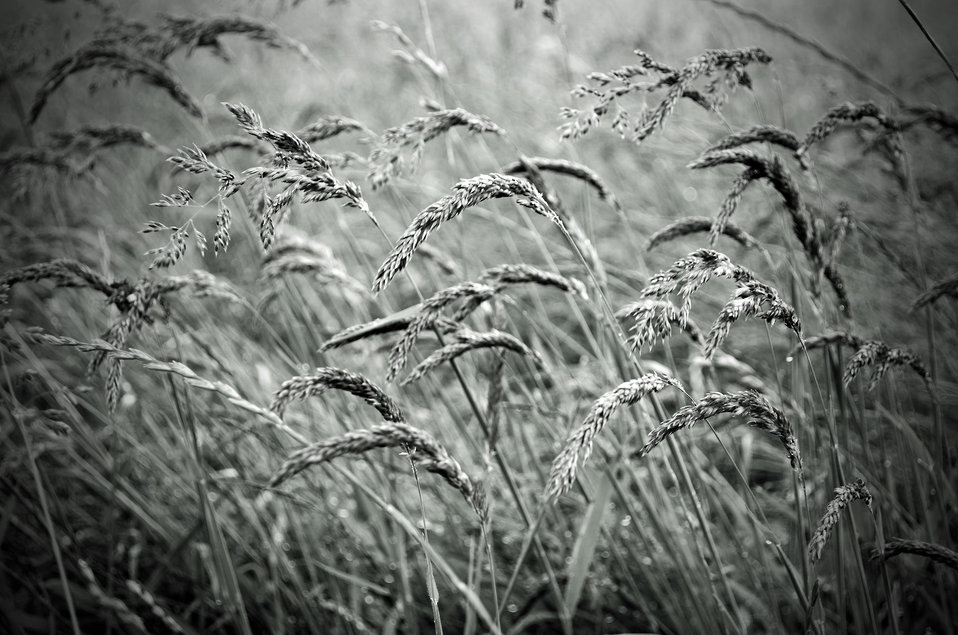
Plant - black and white.